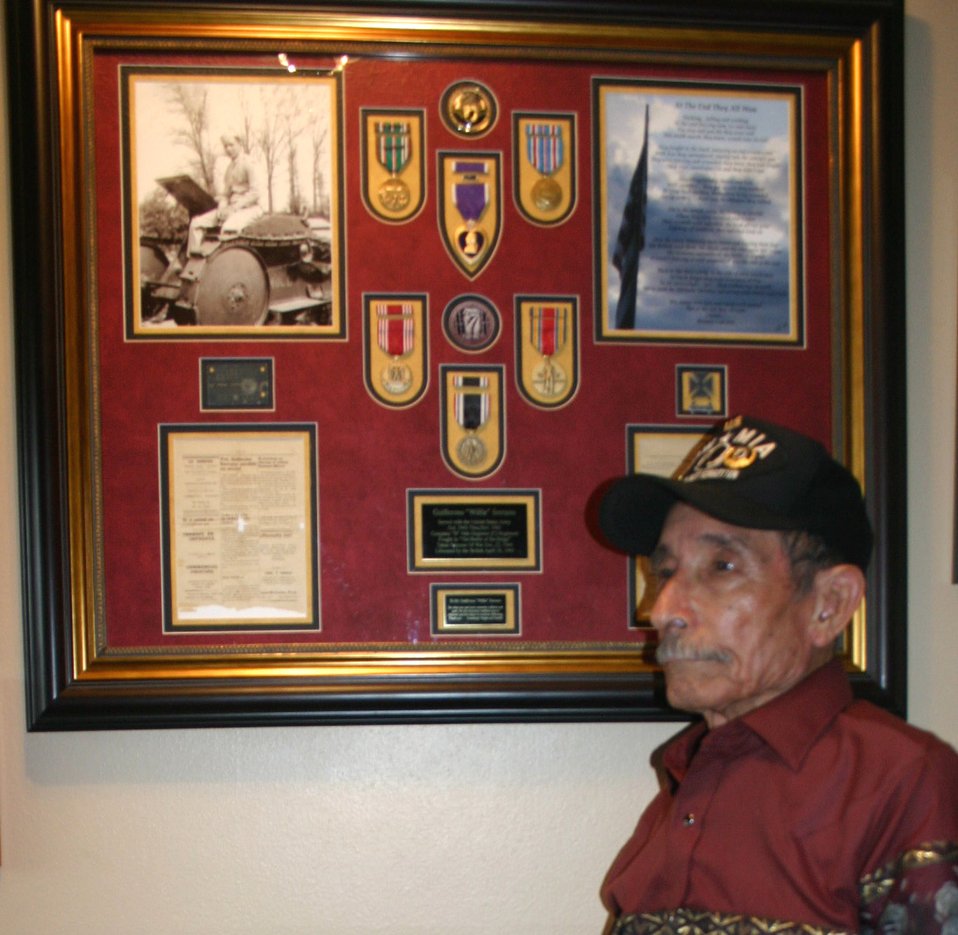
Army vet recalls horrors of POW camp

Guillermo Serrano was a young Army private when he was captured and imprisoned by Germans during the early stages of World War II's Battle of the Bulge.